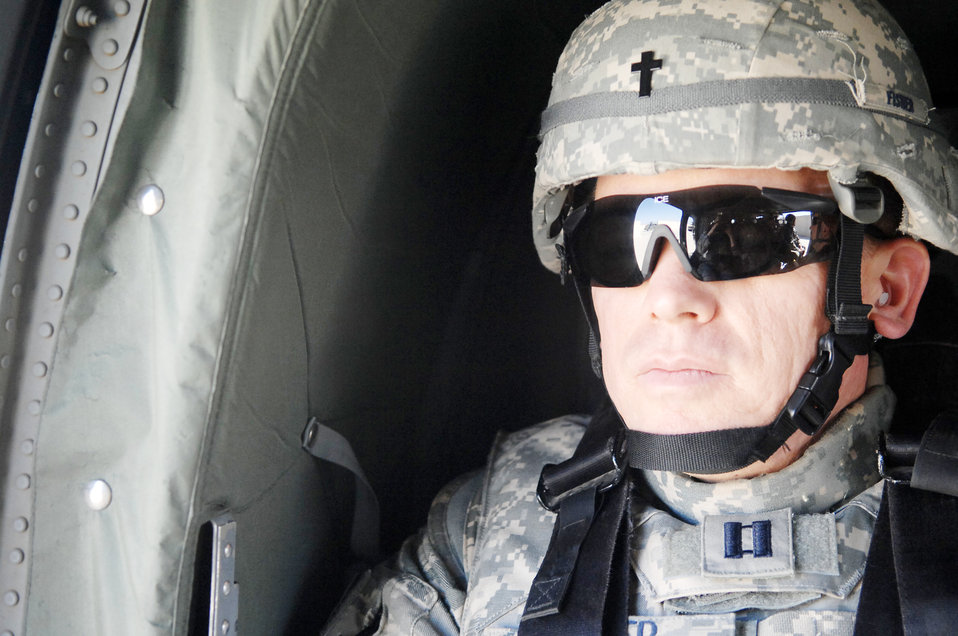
Chaplain provides ministry to Airmen in combat area

Chaplain (Capt.) Steve Fisher gazes out the window of a UH-60 Blackhawk March 22, 2010, en route to Baghdad International Airport. Chaplain Fisher visited more than 100 Airmen while on his mission to provide pastoral access and care to Airmen at remote locations. Chaplain Fisher is the 732nd Air Expeditionary Group chaplain.